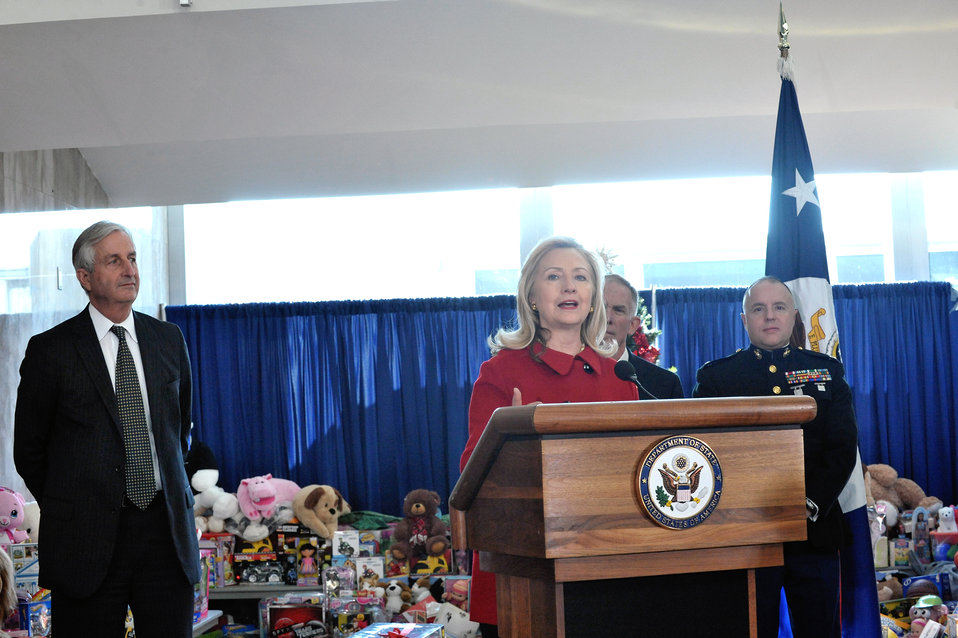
Secretary Clinton Delivers Remarks at Annual Toys for Tots Ceremonial Presentation

U.S. Secretary of State Hillary Rodham Clinton delivers remarks at the annual Toys for Tots ceremonial presentation at the U.S. Department of State in Washington, D.C., on December 19, 2011.